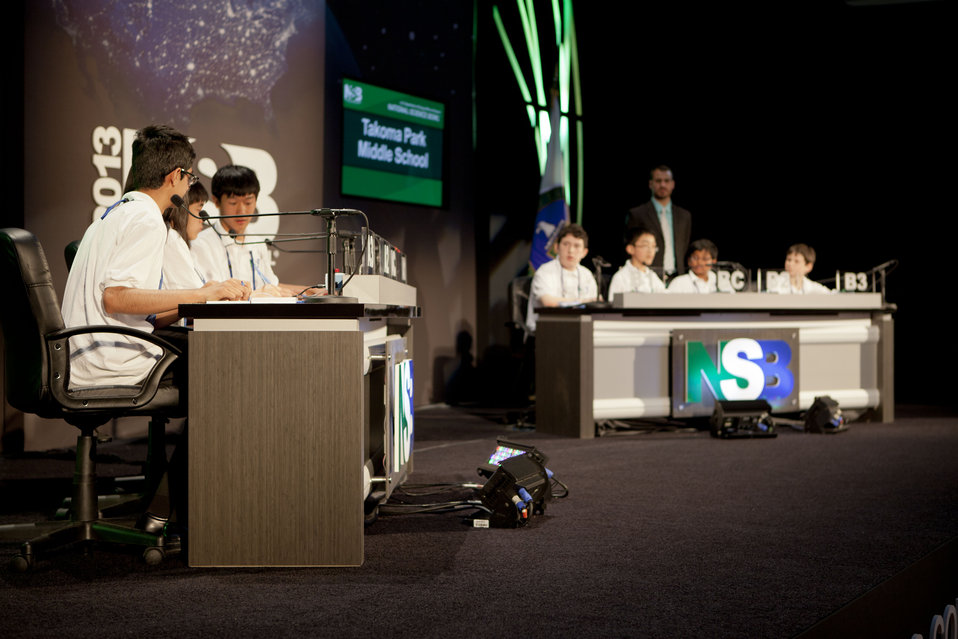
National Science Bowl 2013

Creekside Middle School beat Takoma Park Middle School in the 2013 National Science Bowl Championship, which took place at the National Buildings Museum in Washington, DC.